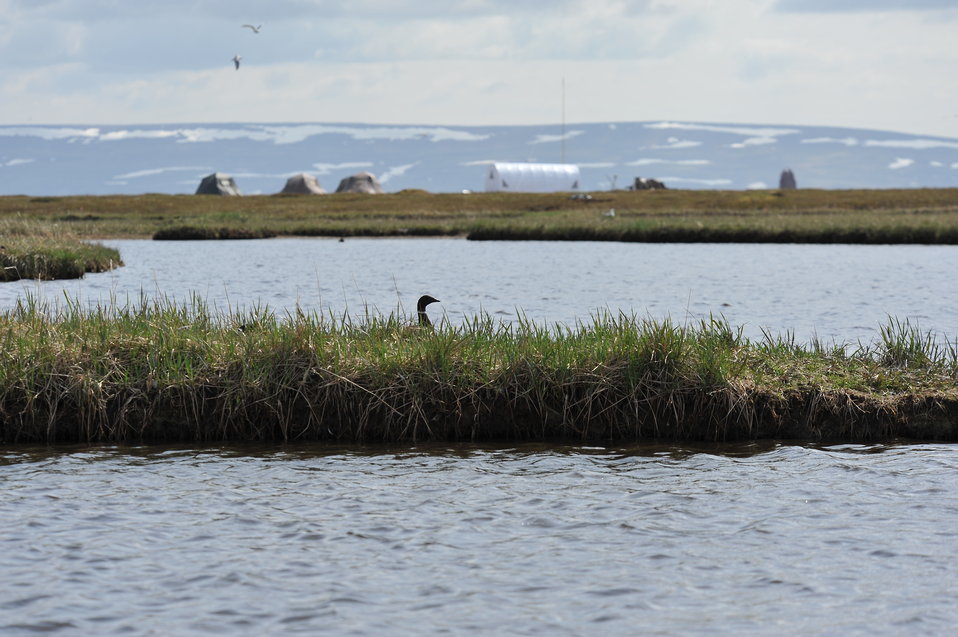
Black brant are coastal breeding geese. Brant colonies can be found along Yukon Delta NWR's coastal zone.

USFWS Yukon Delta NWR